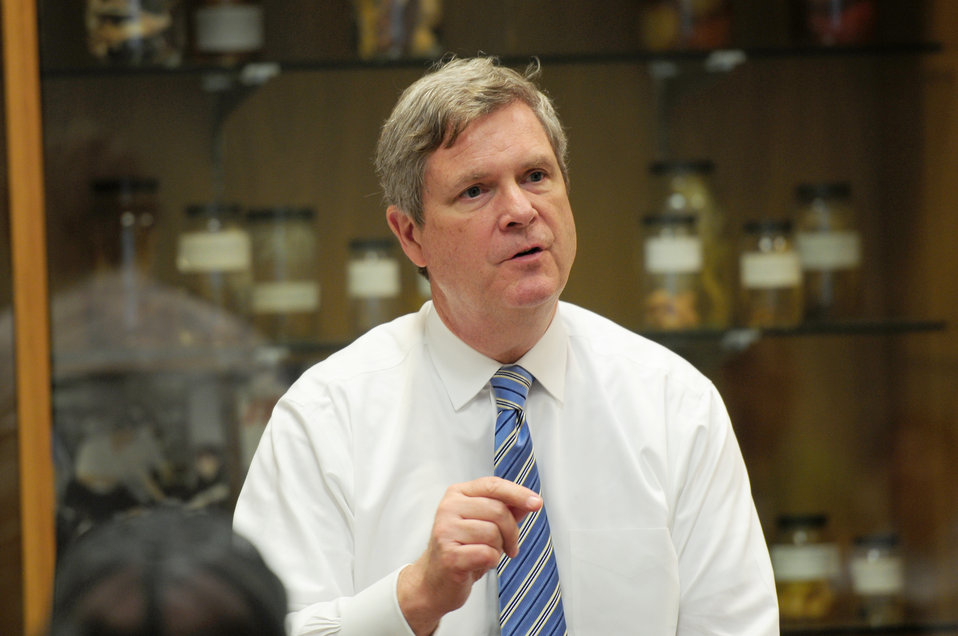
Agriculture Secretary Tom Vilsack speaks at a stakeholder meeting held at the State of Hawaii, Department of Agriculture Plant Quarantine Building in Honolulu, Hawaii, on Tuesday, January 10, 2012, to discuss USDA programs, agricultural challenges in Hawaii, and alternative energy.